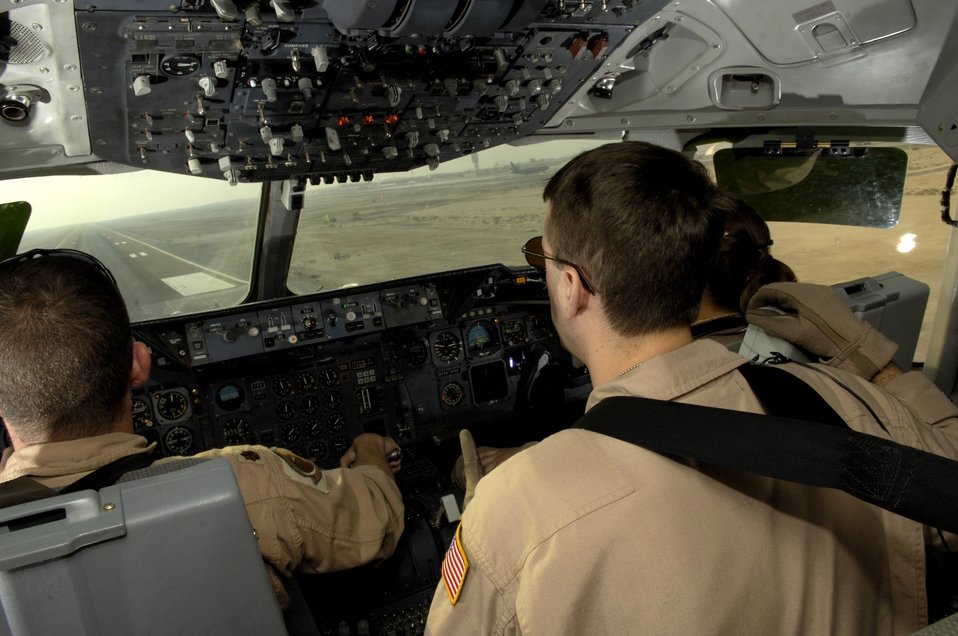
On a mission

(From left) Maj. James Greathouse, Tech. Sgt. Chris Berry and 1st Lt. Nicole Foster land in a KC-10 Extender on a runway in Southwest Asia after an Operation Iraqi Freedom mission on July 18. The Airmen are with the 908th Expeditionary Air Refueling Squadron.